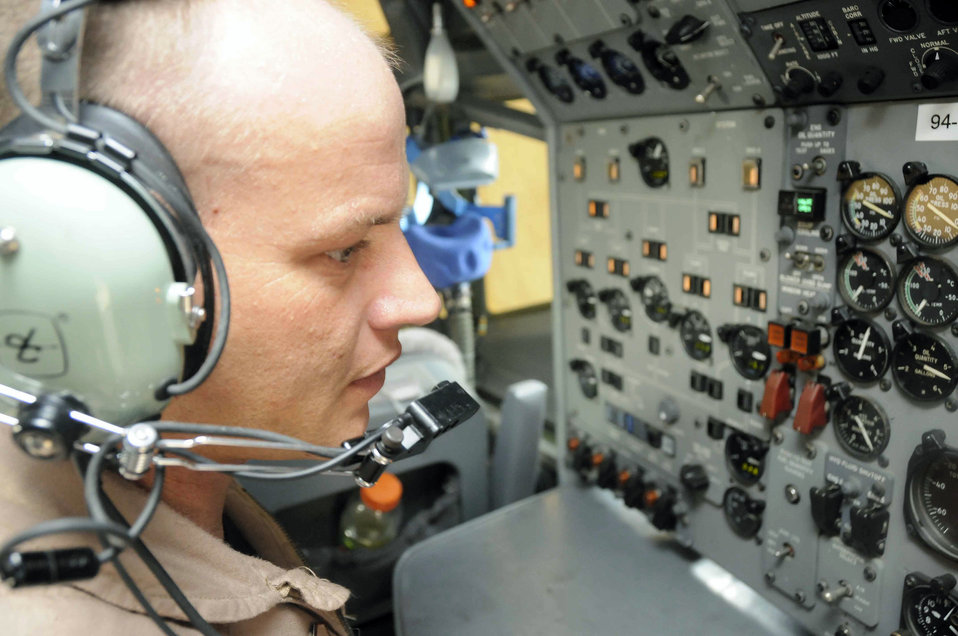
J-STARS total force cooperation helps save lives

Tech. Sgt. Mike Arnold performs pre-flight checks inside the cockpit of a modified Boeing 707 May 19. Sergeant Arnold is deployed with the 7th Expeditionary Airborne Command and Control Squadron.